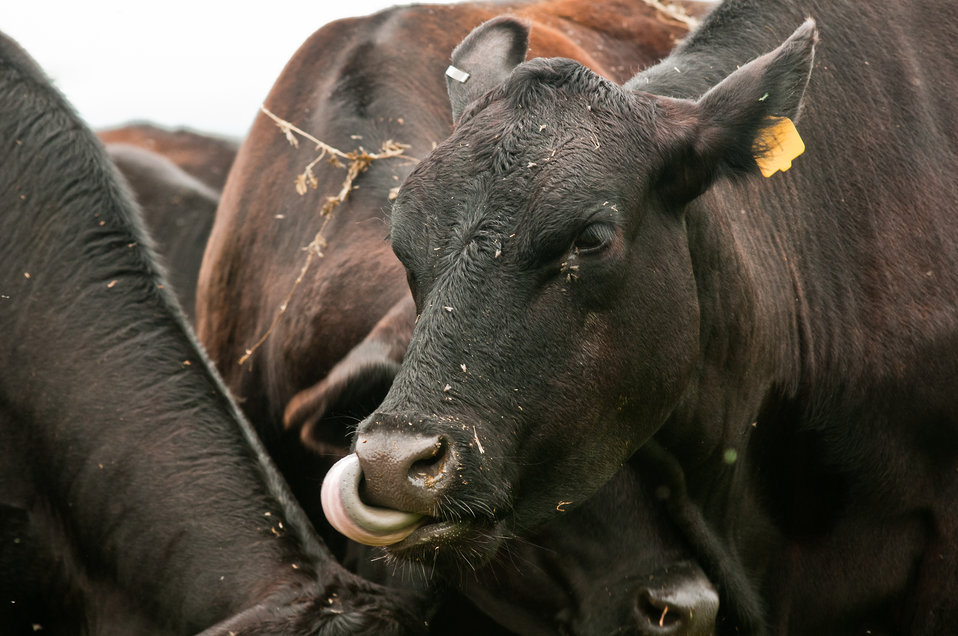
Black Angus cows and calves graze organic pastures, and for added nutrition and variety, they enjoy a daily feeding of sweet silage at Nick’s Organic Farm, owned by Nick Maravell, in Adamstown, MD on Friday, July 12, 2013. The white plastic wrapped bales of pasture grass and alfalfa have been fermenting for months to create sweet silage that stores well and can be used to feed cattle at varying amount all year long. The fermentation process sweetens the taste and increases the vitamin levels. The farm produces Black Angus beef, chicken, turkey, eggs, hay, soybeans, corn, alfalfa, orchard grass, rye; and other crops. The cattle are 100% grass-fed receiving certified organic pasture, certified organic hay (in winter), water and mineral salts mixed with sea kelp. The cattle are not fed hormones, antibiotics or animal products. Poultry feed from grain is ground from organic grain. The poultry also graze on organic pastures. The farm has conducted on-farm research with federal, state and non-profit agencies to refine organic practices. An organization such as the U.S. Department of Agriculture (USDA) Agricultural Research Service (ARS) center in Beltsville has been able to conduct research to improve organic crops and to breed and manage the cattle so that they have.